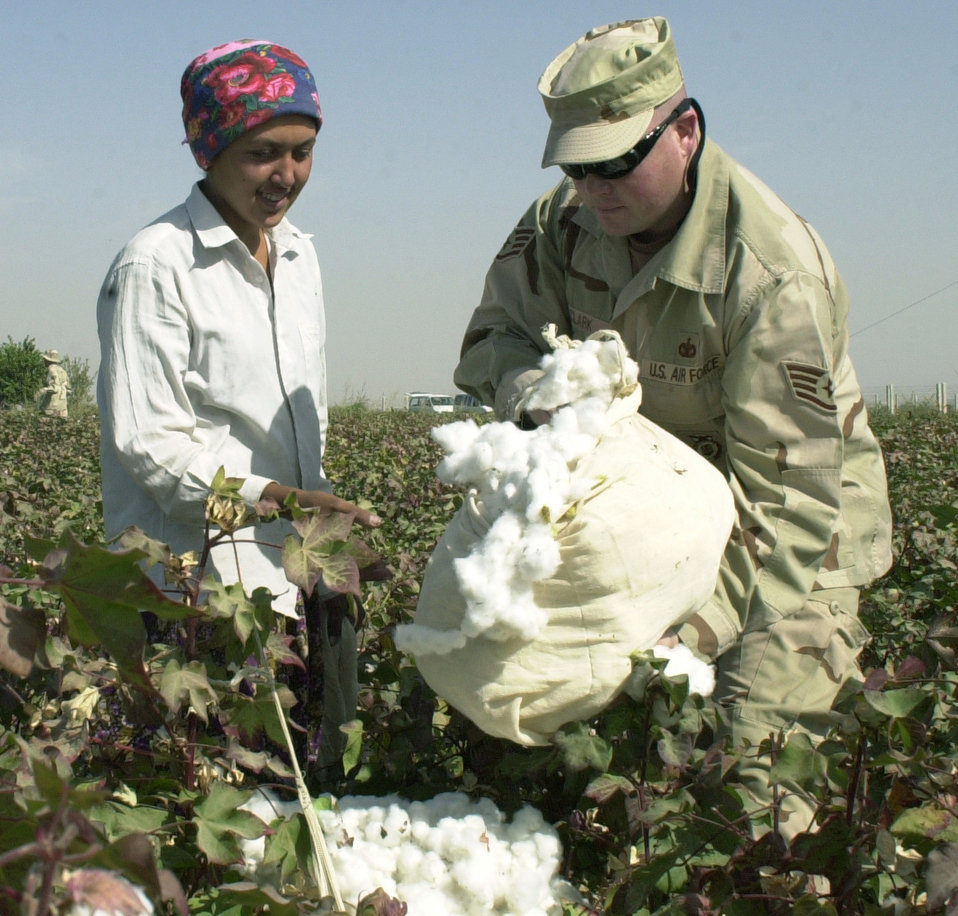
Picking cotton

NEAR KARSHI-KHANABAD AIR BASE, Uzbekistan -- Staff Sgt. Christopher Clark adds his cotton to Nazgul Jarilova's bag. Local women work from sunrise to sunset picking cotton by hand. Base Airmen and Soldiers doubled the pickers' workforce during their visit to the fields recently. Local Uzbeks earn 3 cents for every 2 pounds of cotton picked.